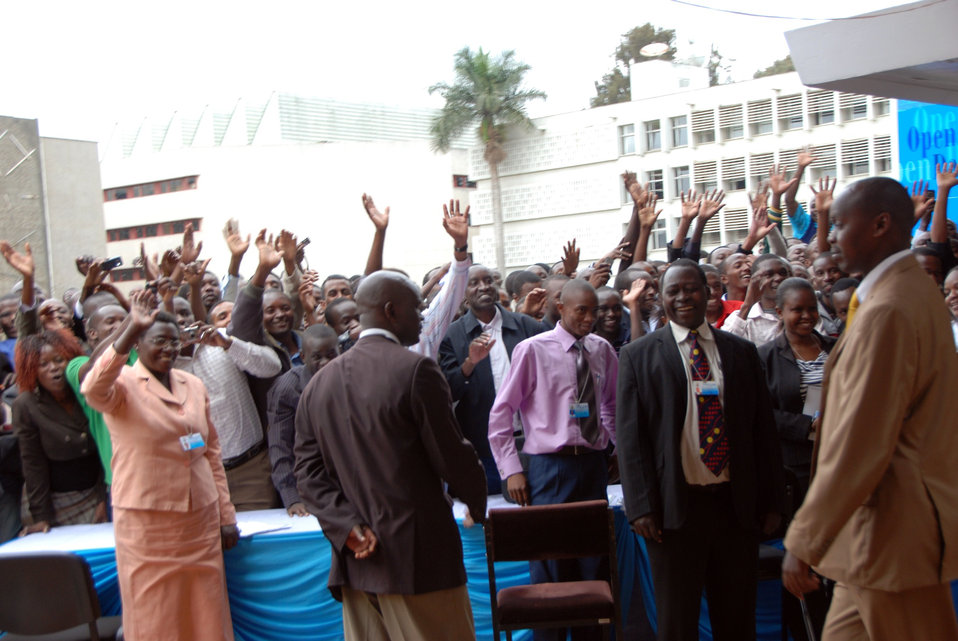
Secretary Clinton Visits Nairobi University

A cheering crowed welcomes U.S. Secretary of State Hillary Rodham Clinton prior to a town hall meeting at the University of Nairobi in Nairobi, Kenya August 6, 2009.